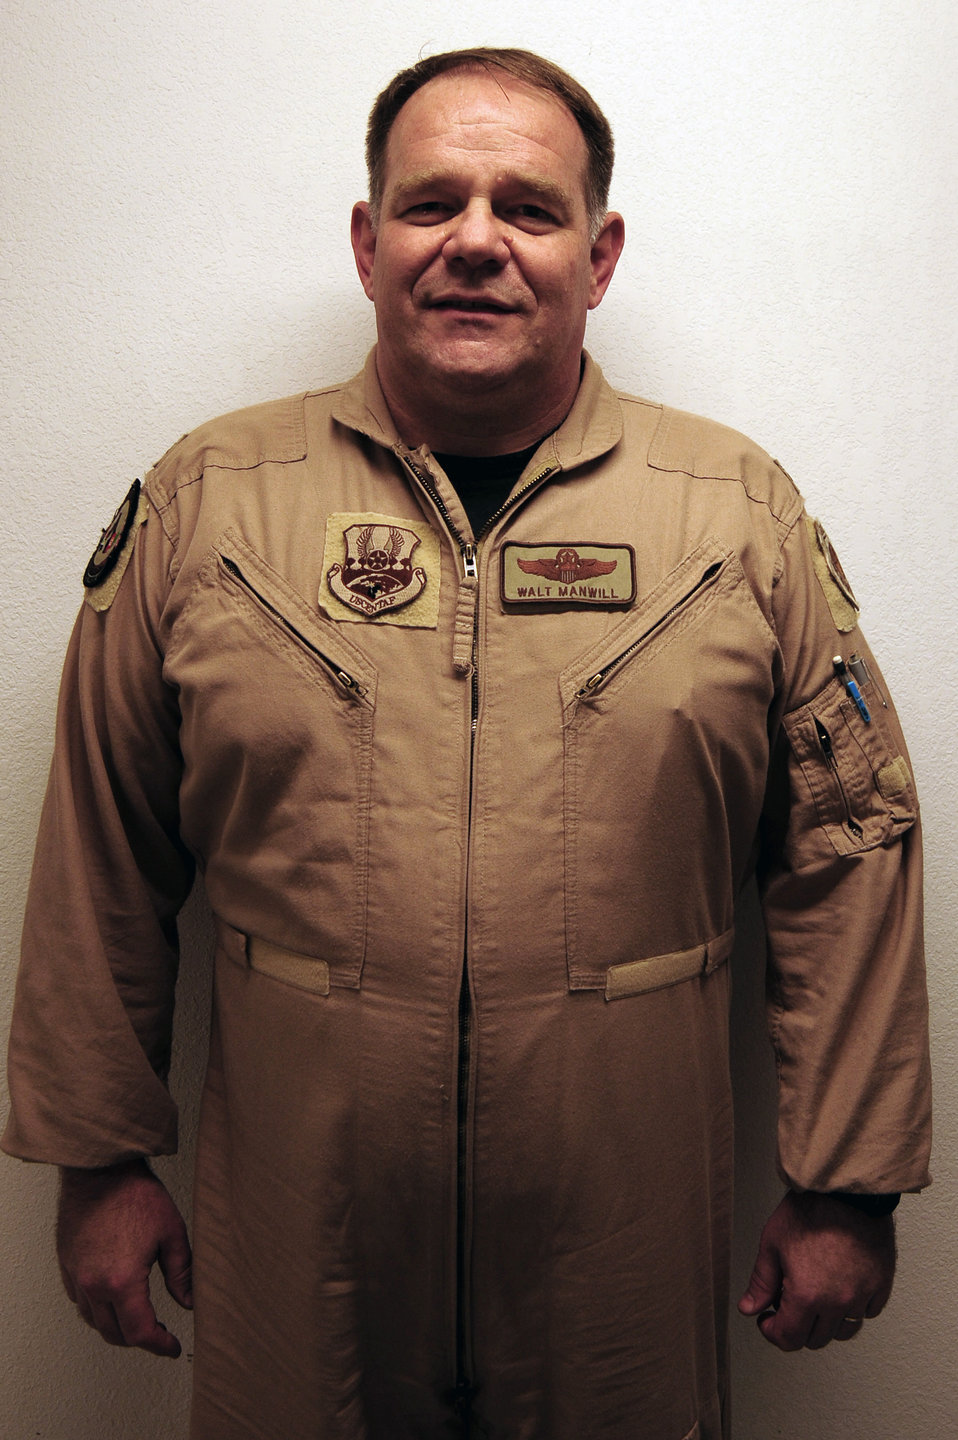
Combat Operations Director

As the Combined Air and Space Operations Center, Director of Combat Operations Division, Lt. Col Walter Manwill is responsible for ensuring that the men and women deployed under his command in the AOR have the equipment, training, processes, and procedures in order to execute the Air Tasking Order.